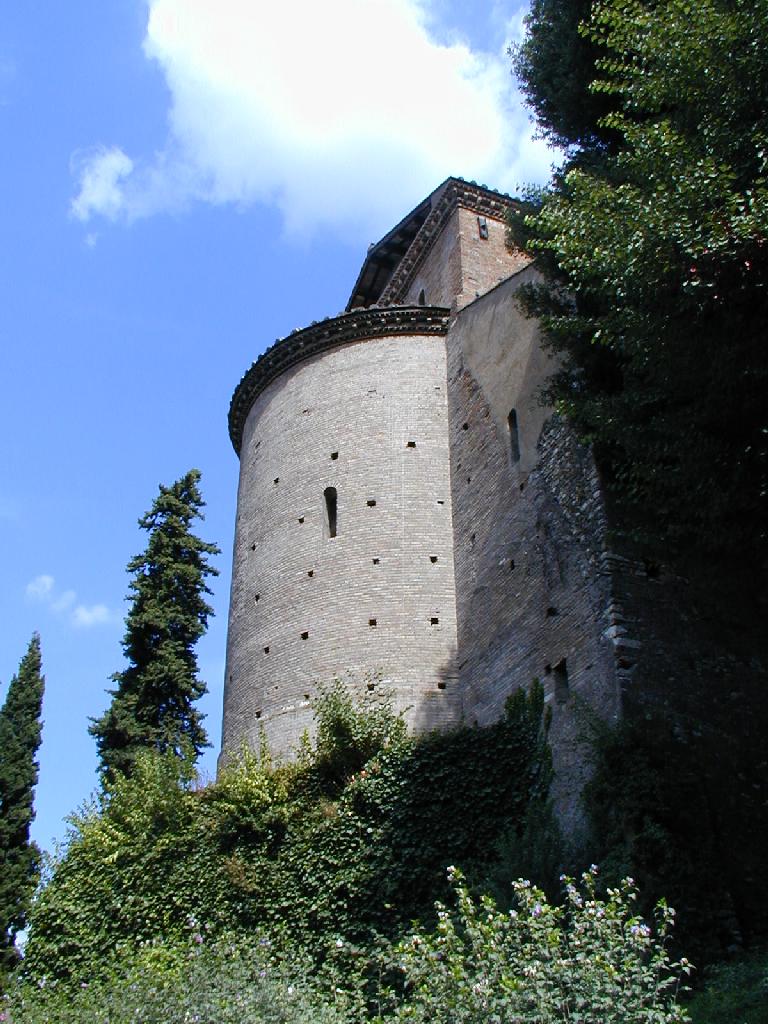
000910 tivoli v d este 17 carita